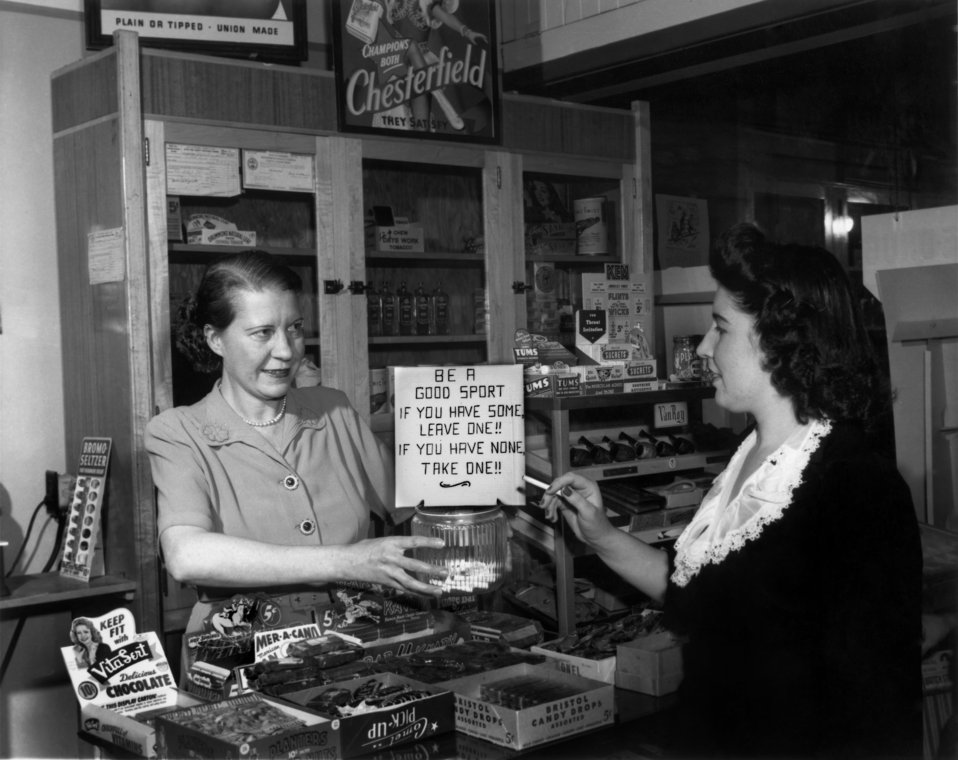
'Cigarett Gag' Oak Ridge

pro 581 DOE photo Ed Westcott 5/1945
Oak Ridge Tennessee